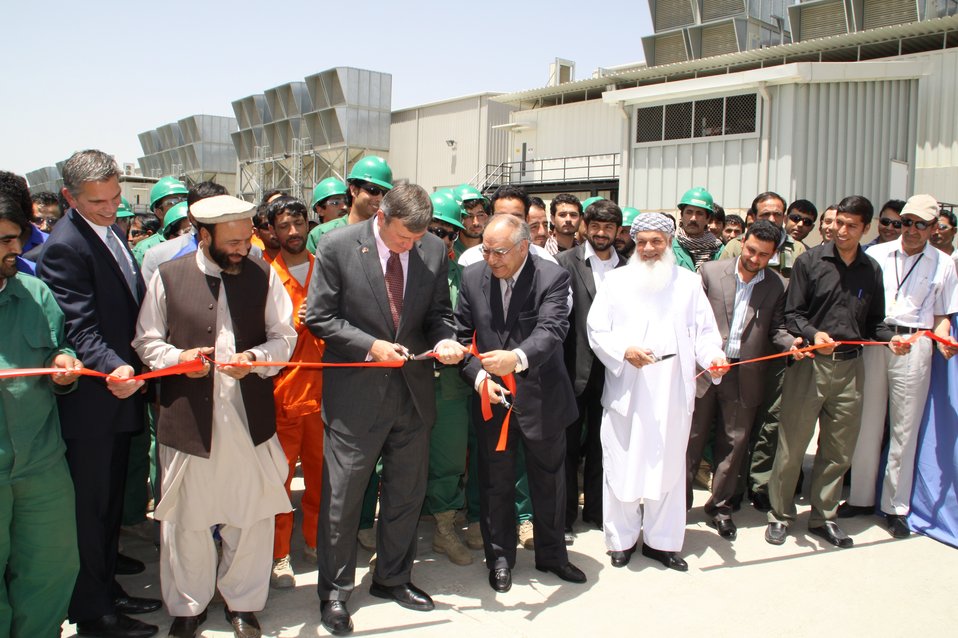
105 MW Tarakhil Power Plant Handover